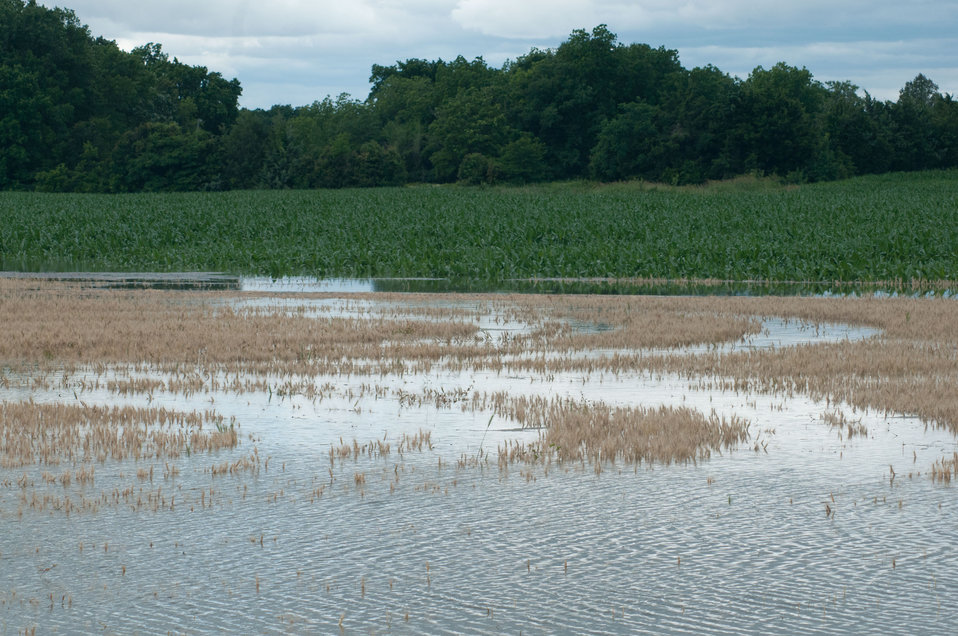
To save crops that threatened by Mississippi River floodwaters farmers harvested wheat two weeks early from the Yazoo River area of MS near Yazoo City, MS, on Monday, May 16. 2011.